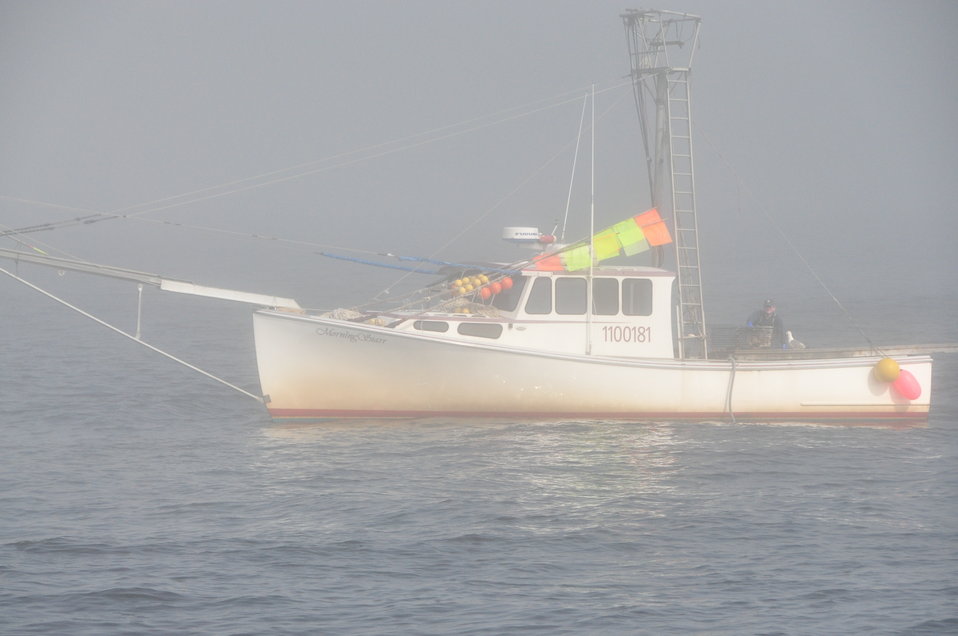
August 2009, lobster boat in Casco Bay, Maine

Or should I say, 'lobstah boat!' (Fair game I'm from Maine myself!) Beautiful to see these boats and colorful buoys appear through the fog.